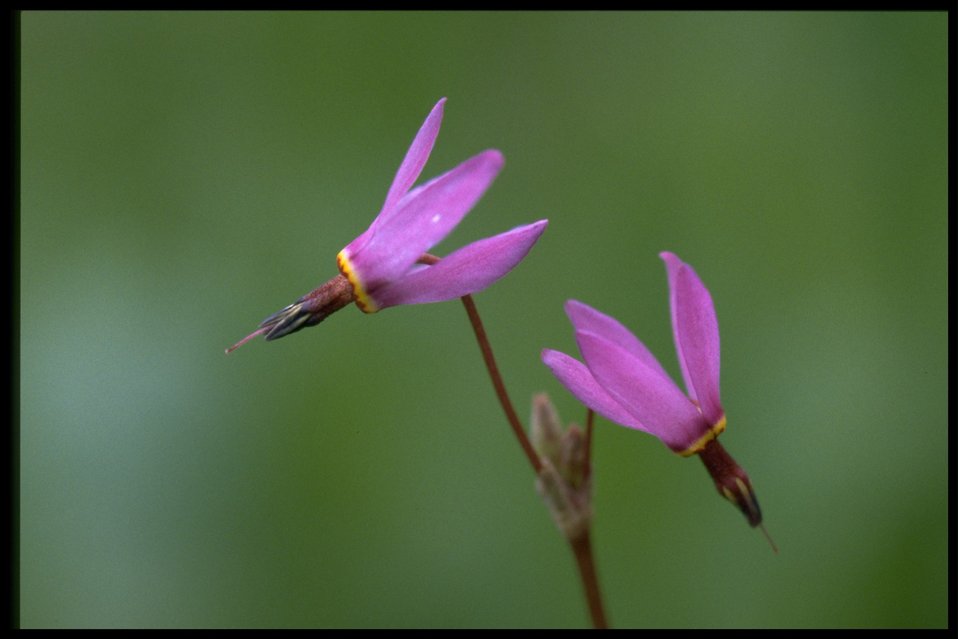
Closeup shot of bonneville shootingstar (Dodecatheon conjugens).